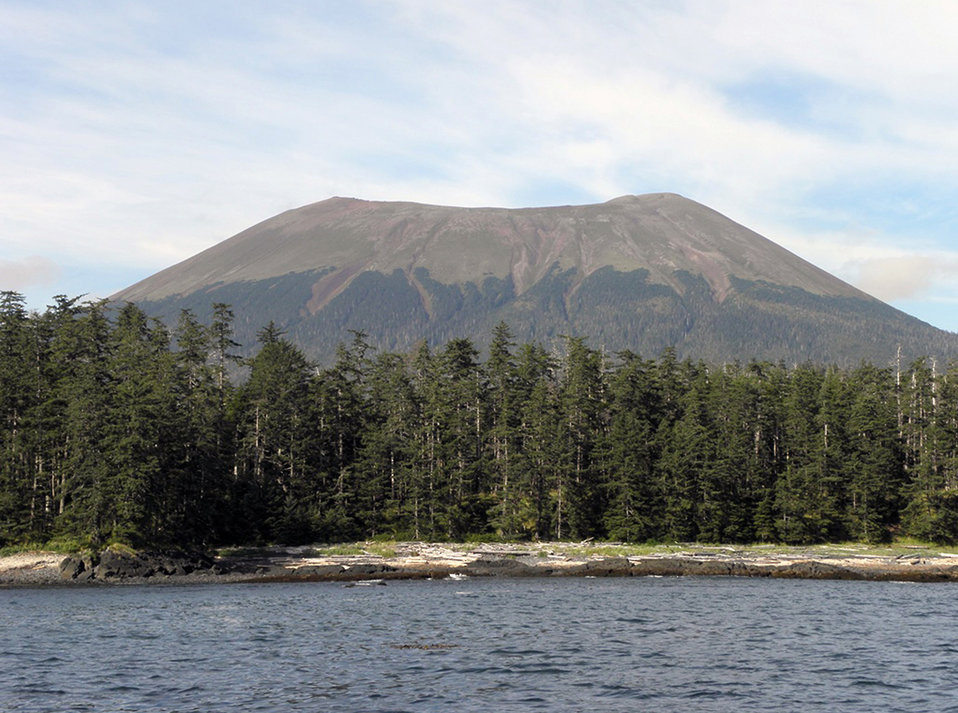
Mount-Edgecumbe

Mount Edgecumbe volcano is on Kruzof Island in Southeast Alaska, just west of Sitka. The Mount Edgecumbe Volcanic Field consists of more than a dozen volcanic vents and domes. The field first erupted more than 600,000 years ago, and volcanic activity continued until 5,000 to 6,000 years ago.